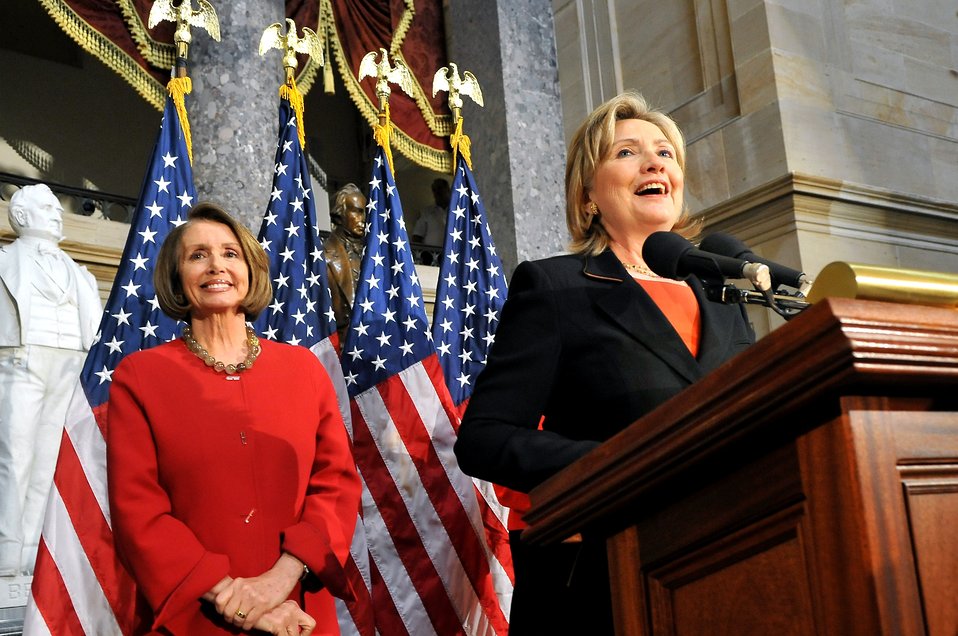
Secretary Clinton With House Speaker Nancy Pelosi

U.S. Secretary of State Hillary Rodham Clinton, with House Speaker Nancy Pelosi in the backdrop, speaks at the celebration of the 30th Anniversary of the Women's History Project, where she was honored at the Statuary Hall, U.S. Capitol, Washington, D.C., March 25, 2010.